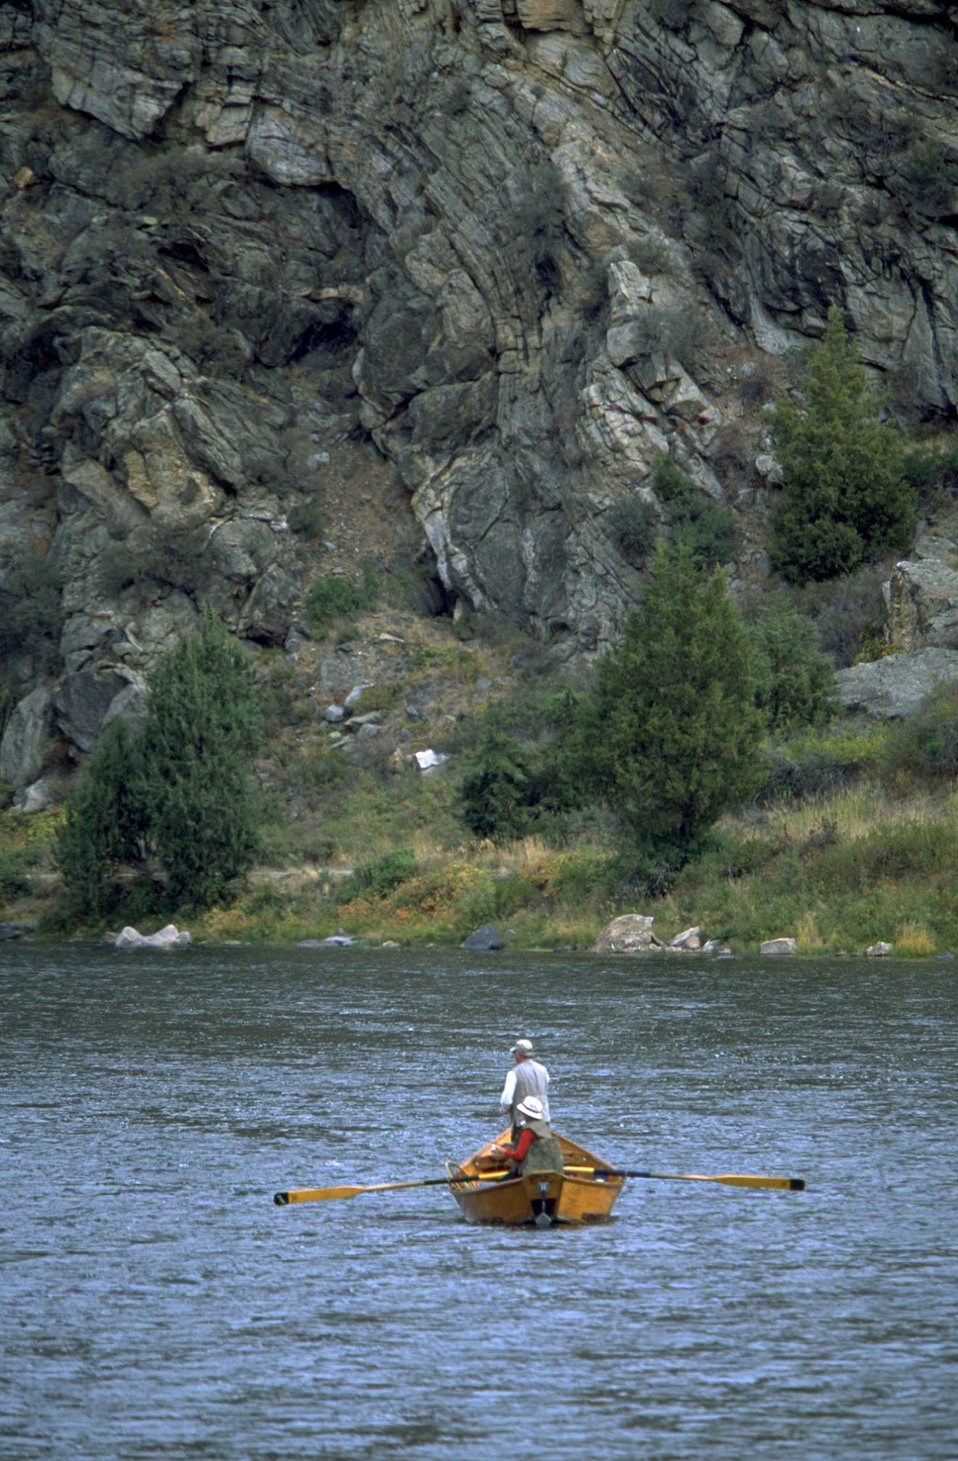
Fishing on the Lower Madison River